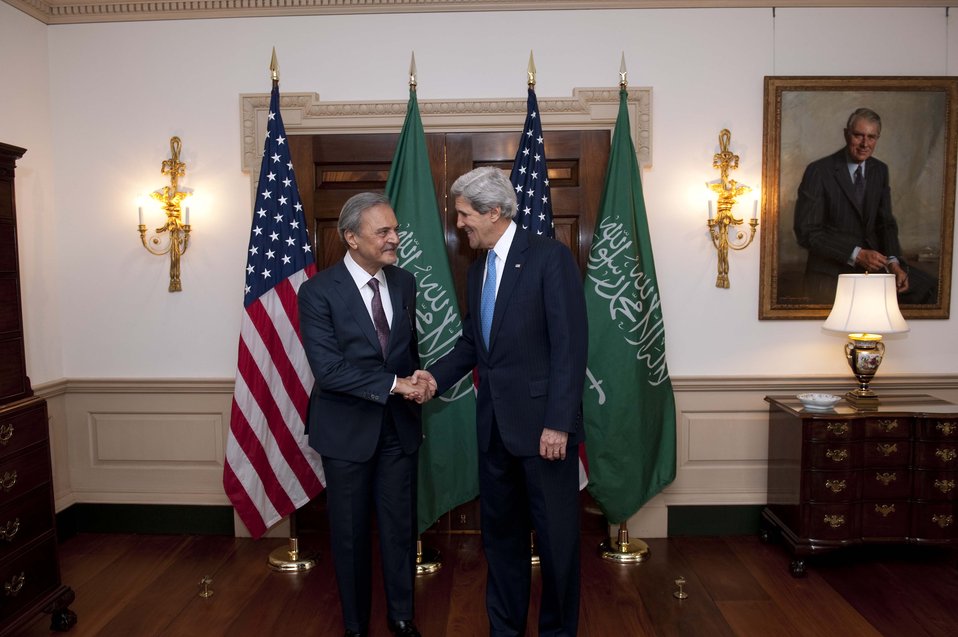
Secretary Kerry Meets With Saudi Foreign Minister Saud al-Faisal

U.S. Secretary of State John Kerry holds a bilateral meeting with Saudi Foreign Minister Saud al-Faisal at the U.S. Department of State in Washington, D.C., on April 16, 2013.